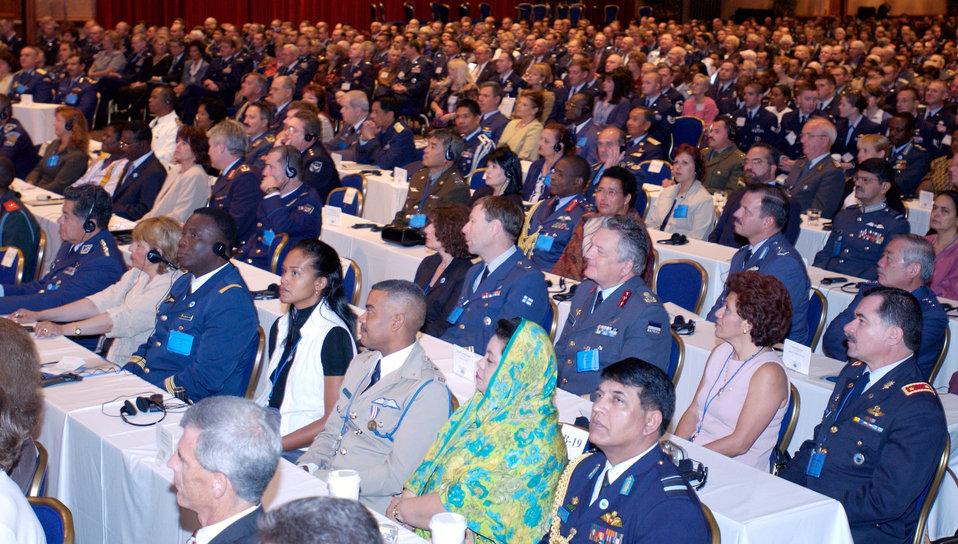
AFA Convention

WASHINGTON -- Delegates from across the Air Force and industry and more than 90 international air chiefs attended the opening ceremony of the Air Force Association's annual convention in Washington, D.C., on Sept. 15. The air chiefs are attending the Global Air Chief's Conference which is running in conjunction with the convention.